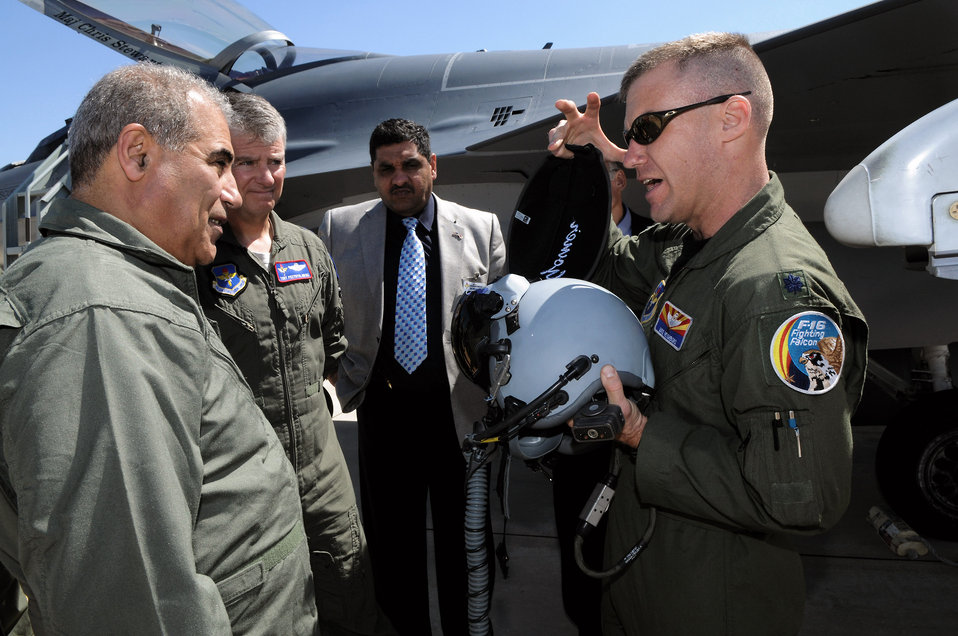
Iraqi Vice Chief of Staff: Air component top priority

Lt. Col. Mike Neighbors briefs Iraqi General Nasier Arkan Al-Abadi, Joint Forces Vice Chief of Staff, and Maj. Gen. Anthony Przybyslawsk, Air Education and Training vice commander, about equipment used by F-16 pilots. The general visited Randolph Air Force Base, Texas, March 4. Colonel Neighbors is an F-16 pilot and director of operations for the 152nd Fighter Squadron.